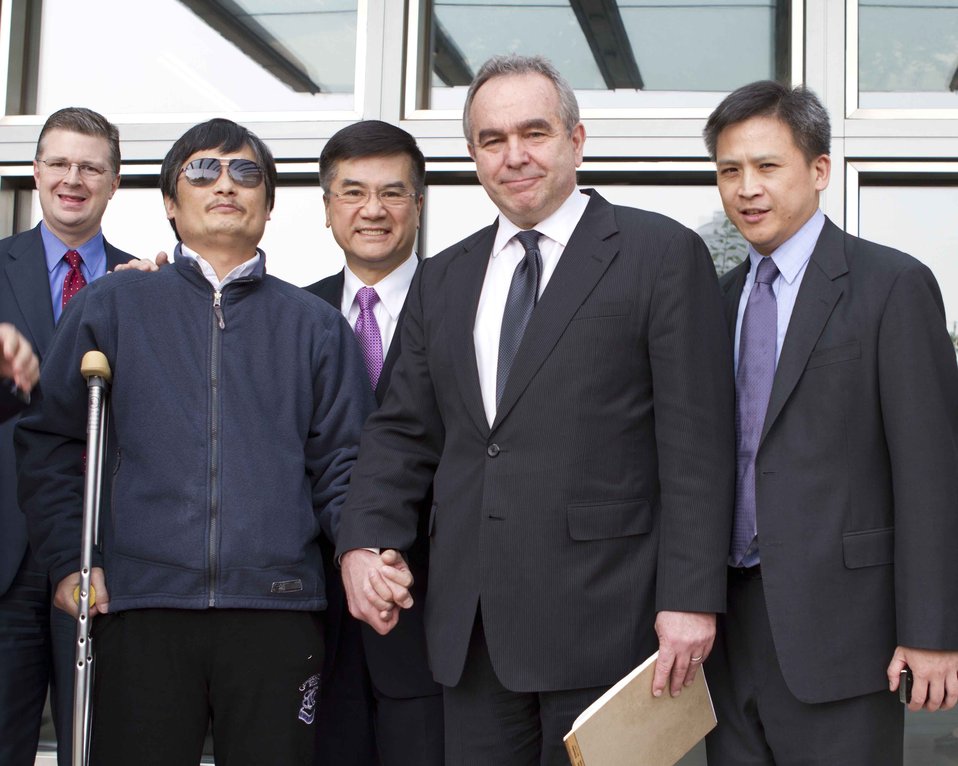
Assistant Secretary Campbell and Ambassador Locke With Chen Guangcheng

Assistant Secretary of State for East Asian and Pacific Affairs Kurt Campbell, second from right; U.S. Ambassador to China Gary Locke, center; and Chen Guangcheng, second from left; at the U.S. Embassy in Beijing, China, on May 1, 2012.